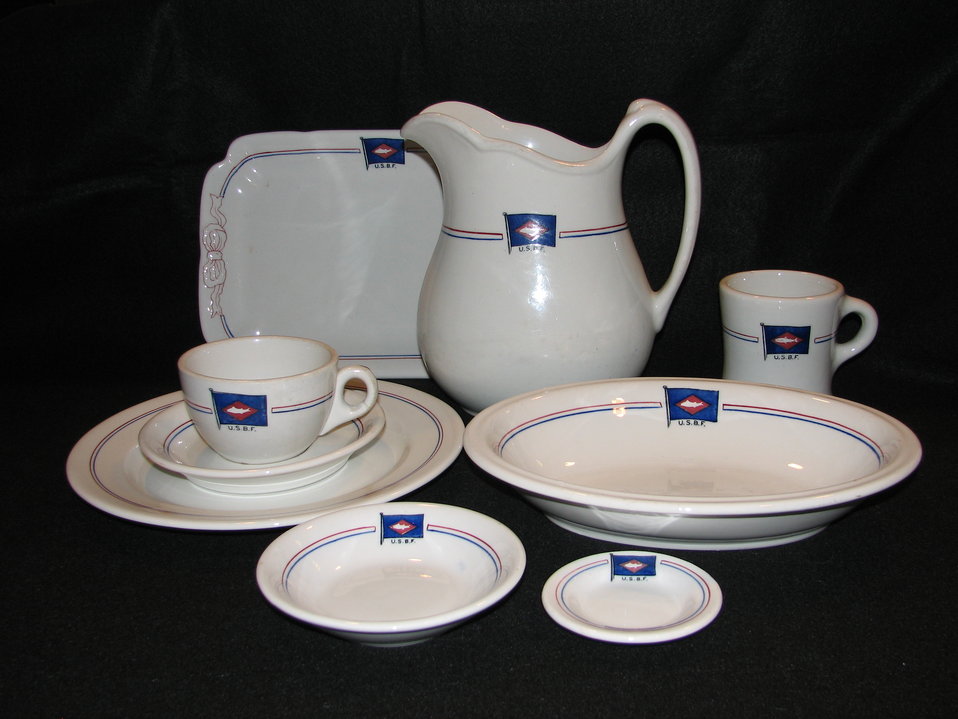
Fish Car china